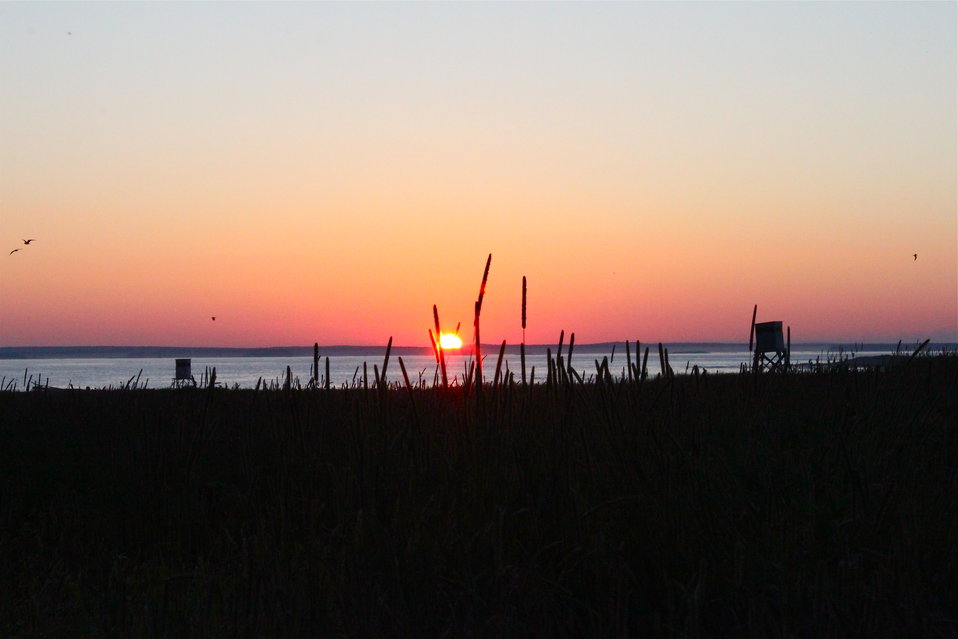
Sunset